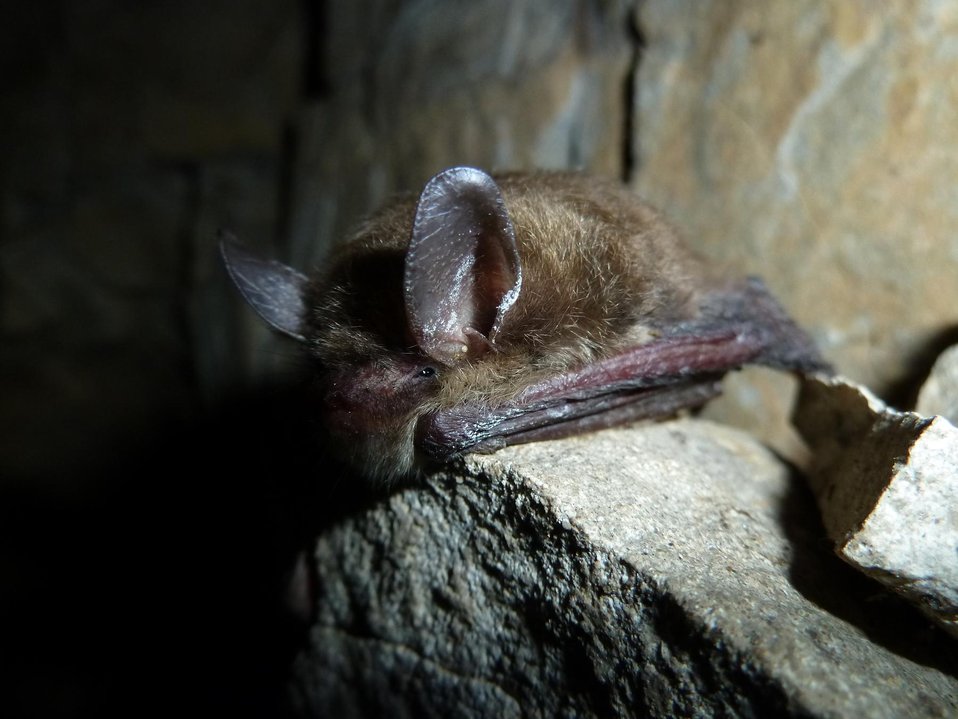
Northern long-eared bat with visible symptoms of white-nose syndrome.